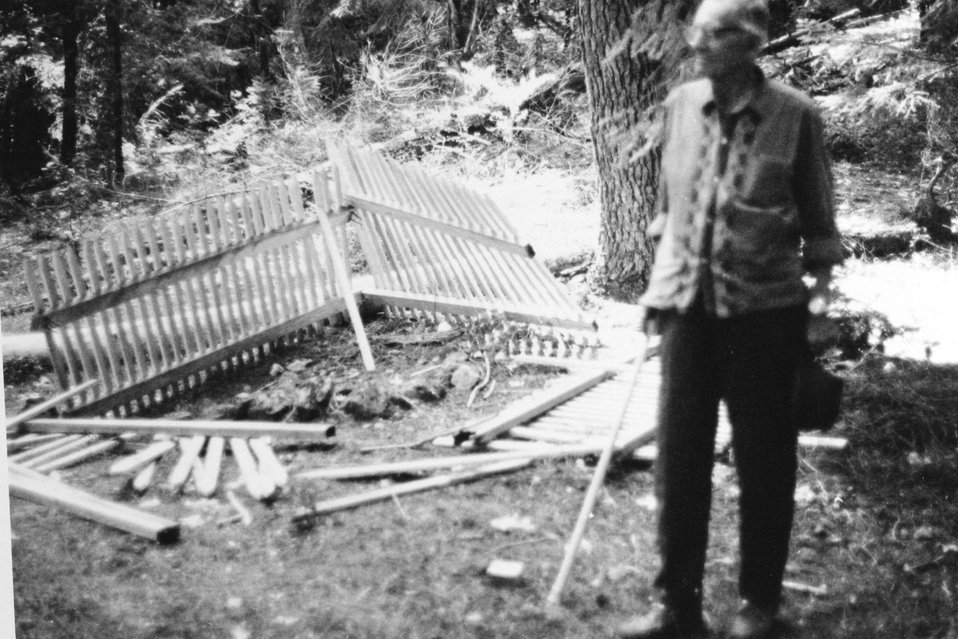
Ivin Billings at Big Meadows